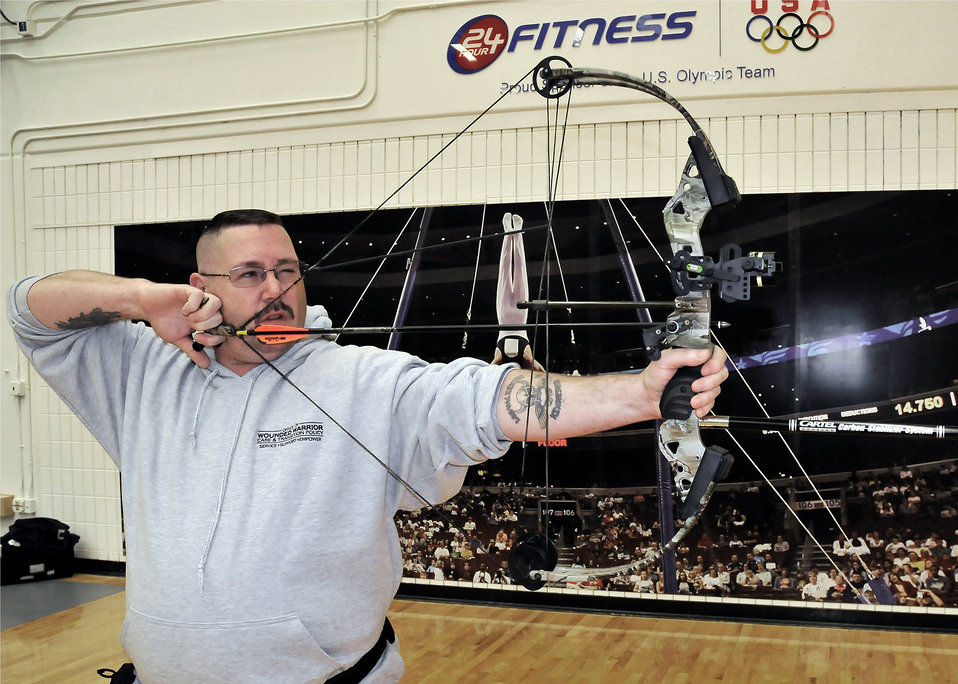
Archers practice patience

Retired Staff Sgt. Jack Shaw demonstrates proper form in shooting a compound bow during archery practice May 15, 2011, at the 2011 Warrior Games at the U.S. Olympic Training Center at Colorado Springs, Colo.